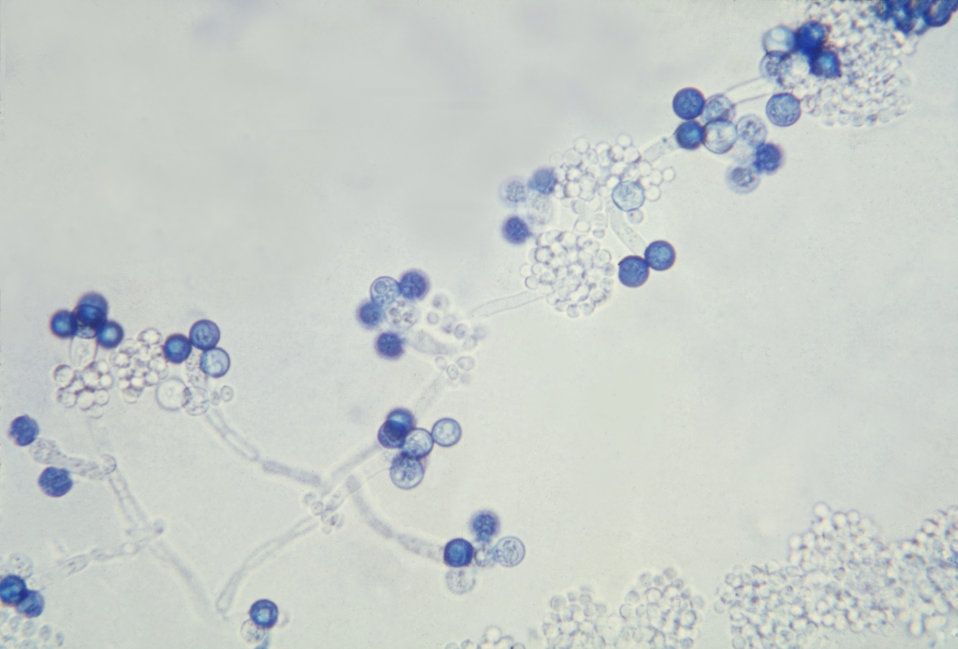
This is an image of chlamydospores, the reproductive, thick-walled structures of the fungus Candida albicans.